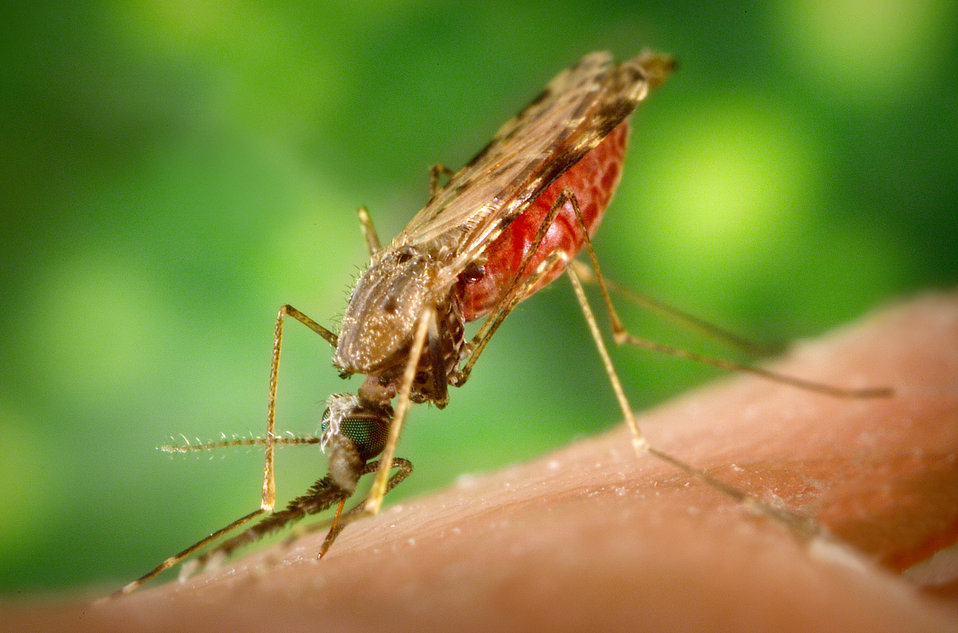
This 2005 photograph depicted a female Anopheles albimanus mosquito while she was feeding on a human host, thereby, becoming engorged with blood.